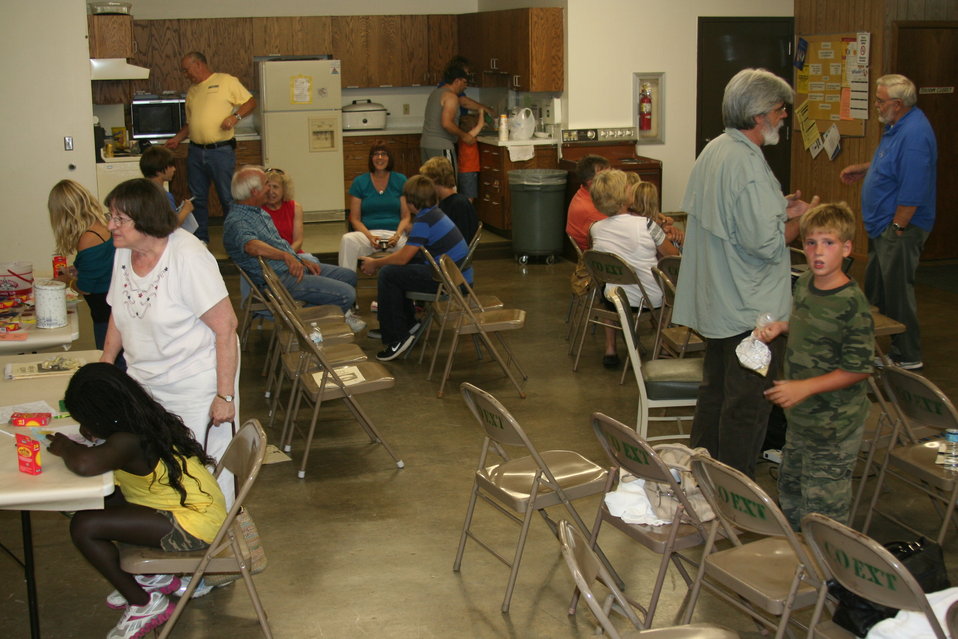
Creatures of the Night 2011